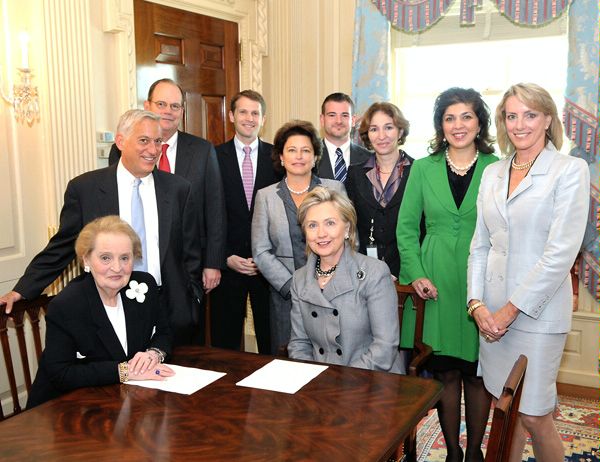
Secretary Clinton Announces Partners for A New Beginning with Former Secretary of State Madeleine Albright, Walter Isaacson, and Barclay Resler at the U.S. Department of State, Washington, DC, April 27, 2010.